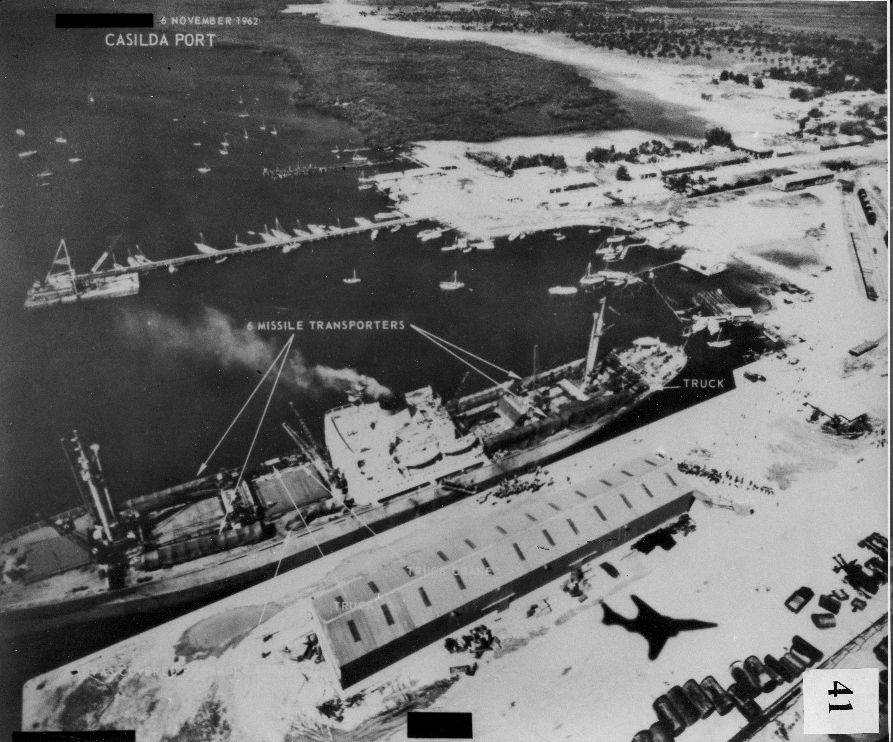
Stand-up of training group marks an international homecoming

Port Casilda, Cuba, is captured by an RF-101 pilot with the 363rd Tactical Reconnaissance Wing on Nov. 6, 1962, while the aircraft itself casts a shadow over the port. The 363rd, activated once again March 26 as a training group on an air base in the Persian Gulf region, has a long and notable history, to include the 363rd TRW, which performed actions in association with the Cuban Missile Crisis.